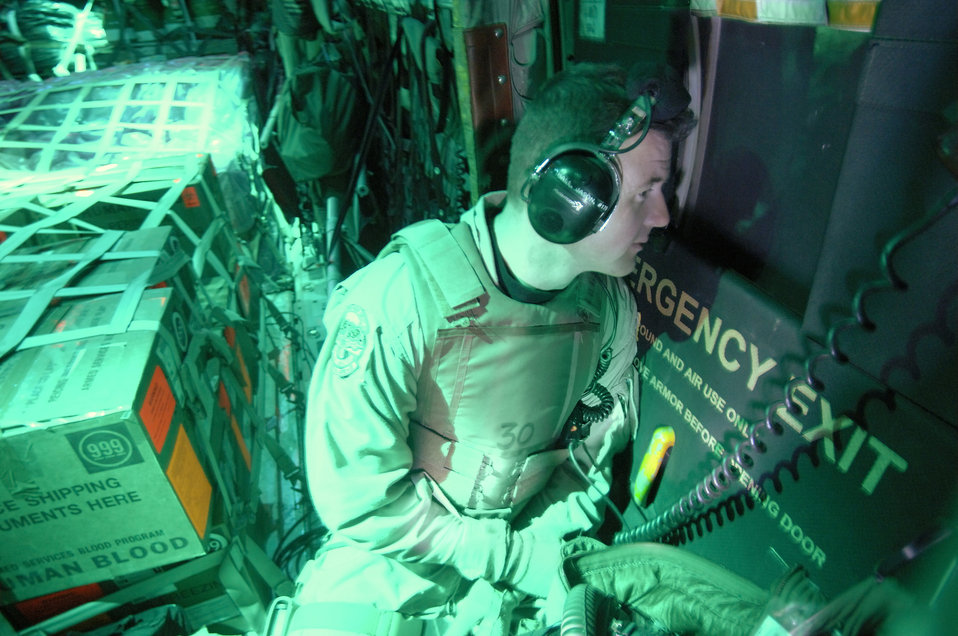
New Years' over Iraq

SOUTHWEST ASIA -- In the glow of a C-130 Hercules' cargo compartment, Staff Sgt. Jason Hall keeps an eye out the window for signs of an attack. The crew flew a New Year's Eve mission to deliver passengers and cargo. Members of the Air Force Reserve Command's 731st Airlift Squadron are ending their Southwest Asia tour.